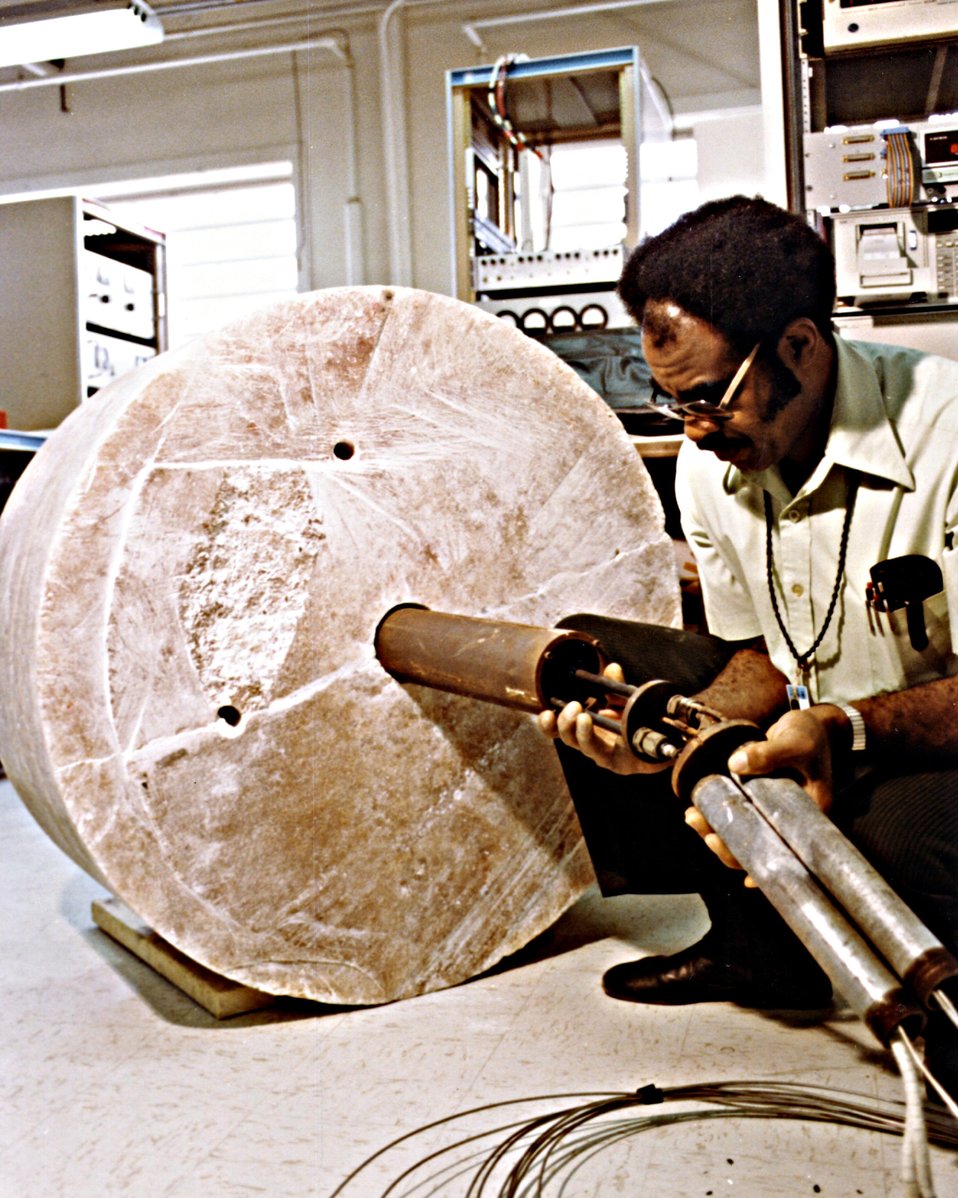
RESEARCHER IS SLIDING A HEATING PROBE INTO A SALT CYLINDER FROM DEEP BEDDED SALT ZONE IN SOUTHEAST NEW MEXICO.

SANDIA NATIONAL LABORATORIES IS CONDUCTING A DETAILED ENGINEERING PROGRAM TO DETERMINE THE SUITABILITY OF THE SALT BEDS, ABOUT 30 MILES EAST OF CARLSBAD, NM, FOR LOCATION OF DOE'S PROPOSED RADIOACTIVE WASTE DISPOSAL FACILITY. FOR A TYPICAL TEST, WHICH CAN LAST SEVERAL MONTHS, MAXIMUM HEATER POWER OUTPUT IS MORE THAN 1200 WATTS, SECTIONS OF THE SALT CAN REACH ABOUT 500 DEGREES FAHRENHEIT.